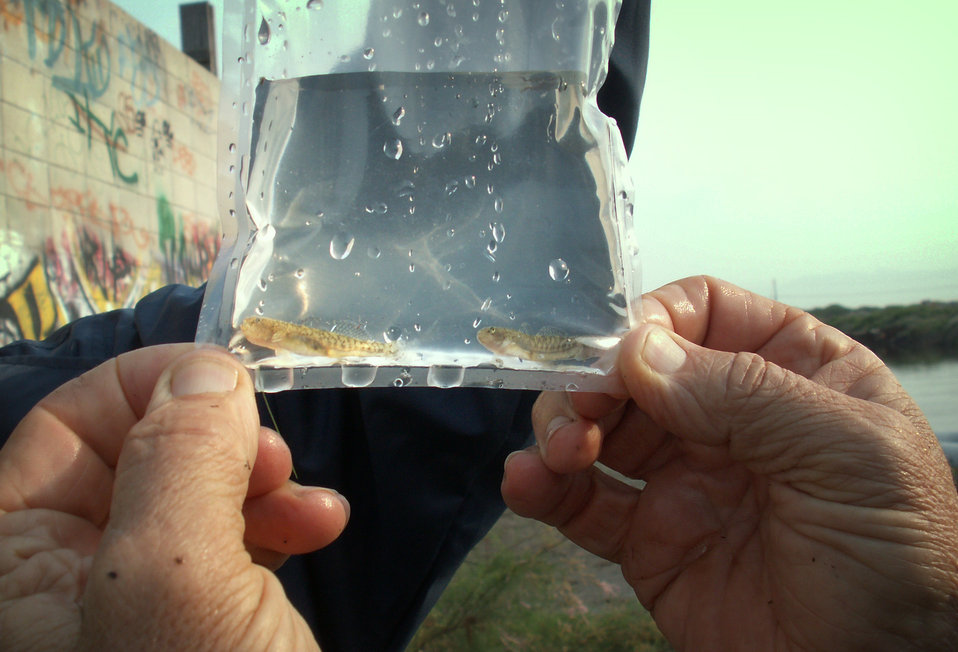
Tidewater Goby